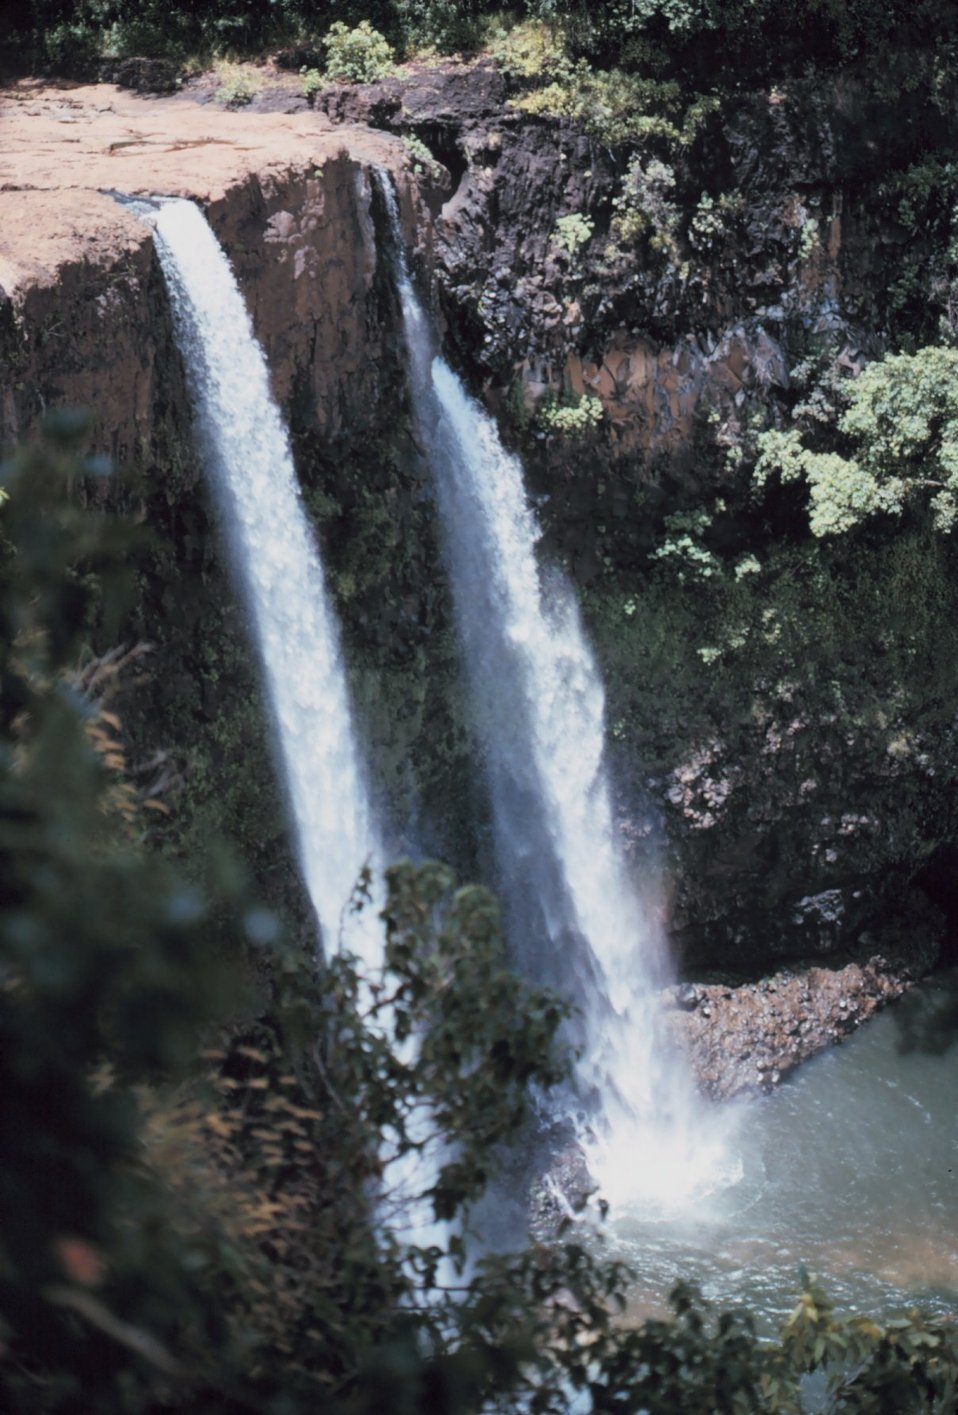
Wailua waterfall